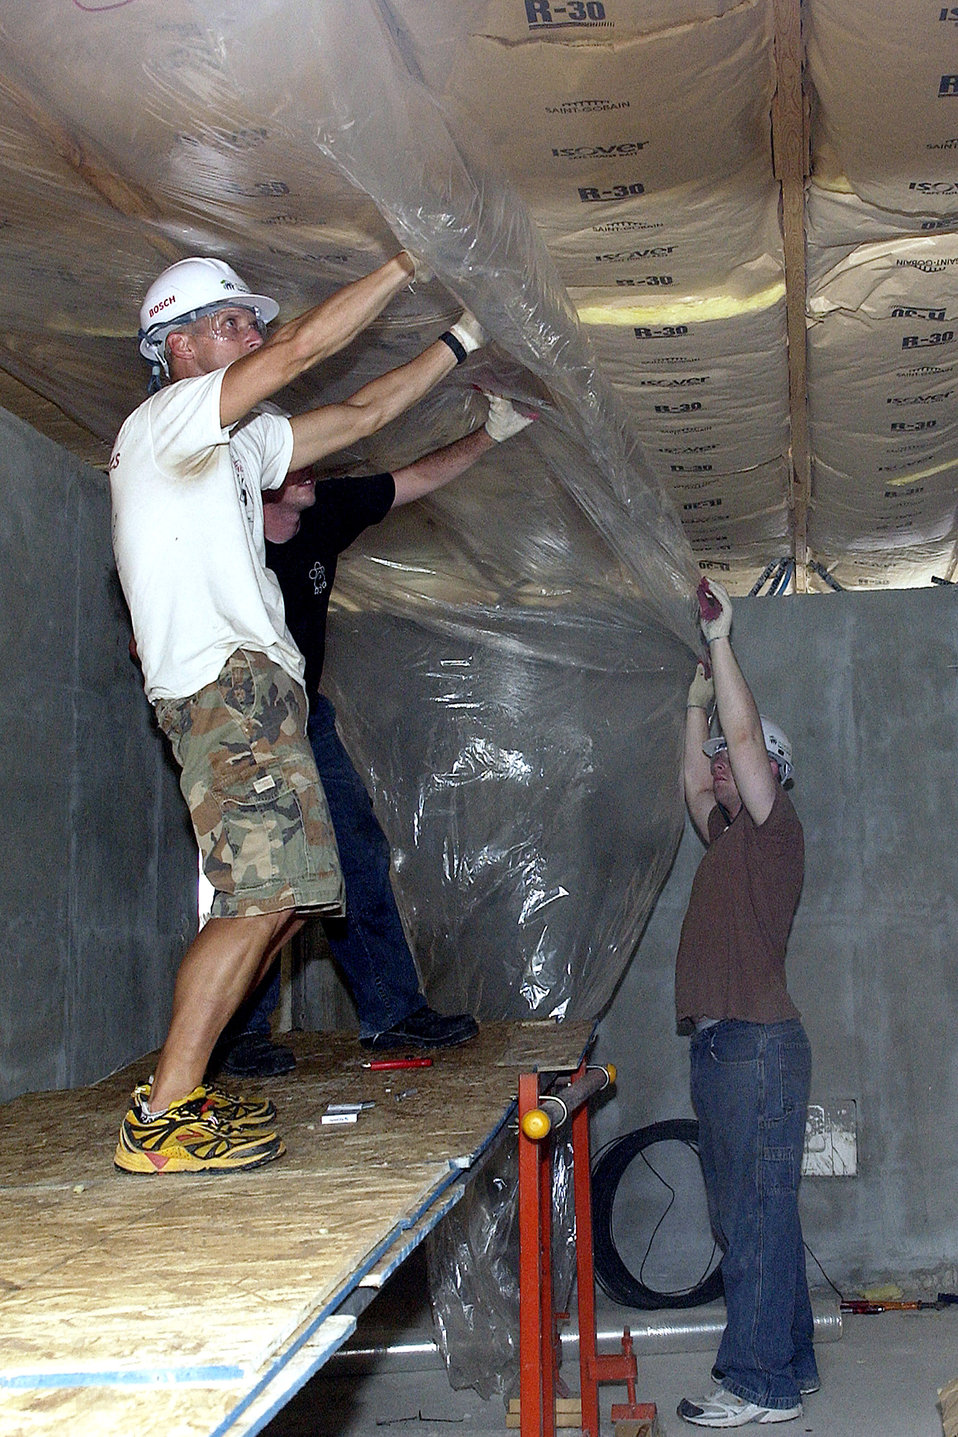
Good neighbors

Airmen from across the 8th Fighter Wing at Kunsan Air Base, South Korea, work on the interior portion of a Habitat for Humanity home Aug. 1 in Gunsan City, South Korea. Airmen from Kunsan AB and Korean university students worked together for a week building Habitat for Humanity homes for Gunsan City families.